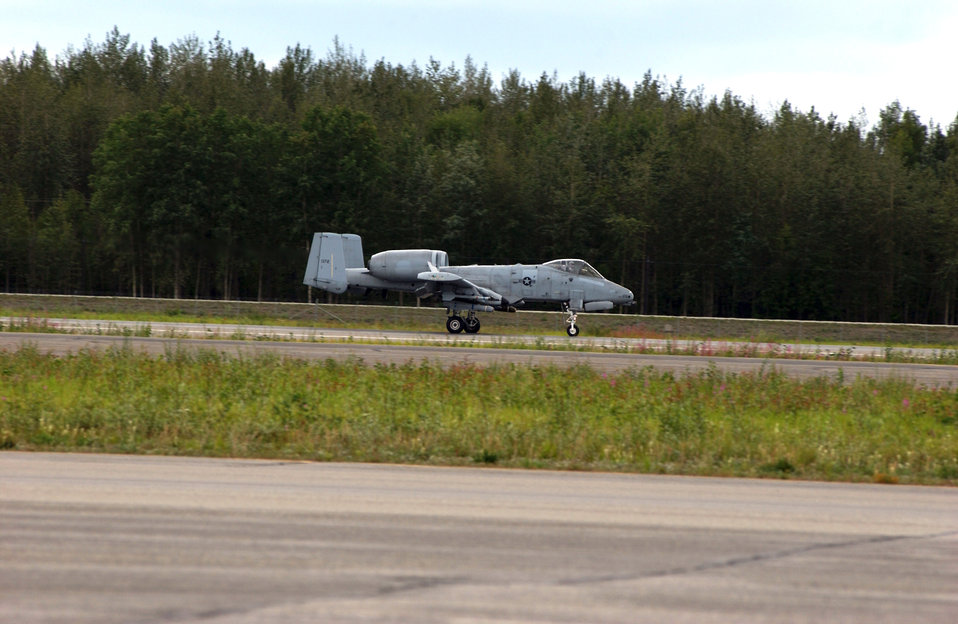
A-10s depart Eielson

An A-10 Thunderbolt II from the 355th Fighter Squadron lands after the last flight at Eielson Air Force Base, Alaska, July 31. The first two A-10s arrived at Eielson Dec. 18, 1981; the last two A-10s are set to leave Aug. 15 for Moody AFB, Ga., and Gowen Field, Idaho.